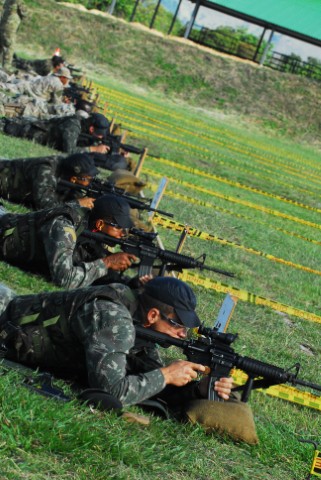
Commando Competition

Special operations forces from several countries conduct weapons training as part of the annual Fuerzas Comando exercise at Fort Tolemaida, Colombia, June 4, 2012.